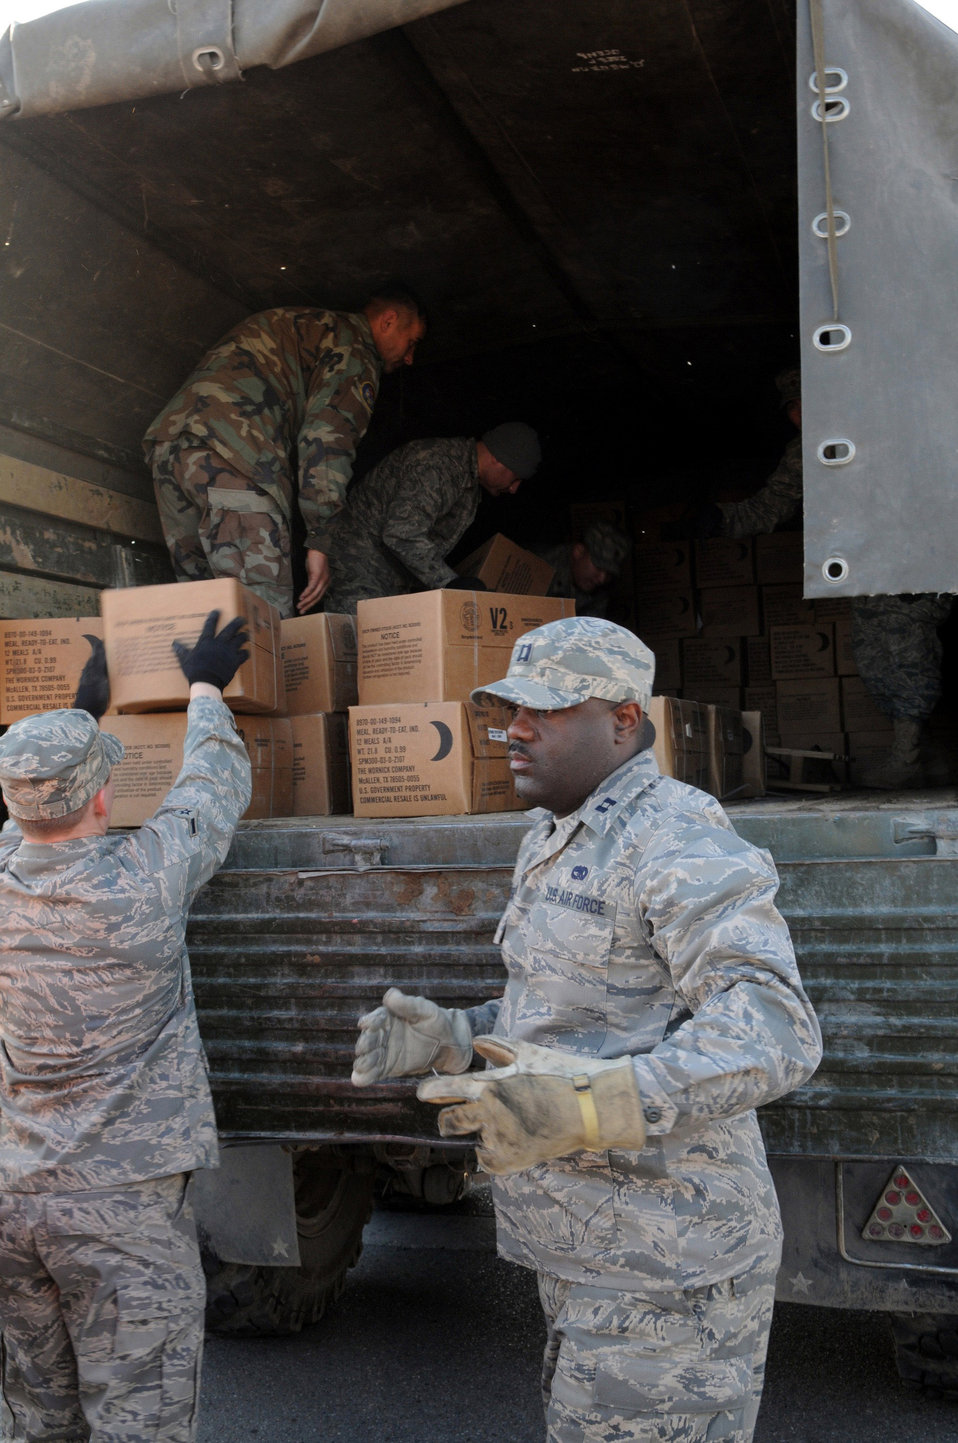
Manas Airmen help provide aid to Kyrgyz in need

Airmen at Manas Air Base, Kyrgyzstan, work with Kyrgyz military representatives from the Ministry of Emergency Situations to load donated meals-ready-to-eat following a humanitarian assistance ceremony at the base Nov. 25. Department of Defense officials donated MREs and cold weather sleeping bags to help local Kyrgyz who may need assistance during the coming winter.